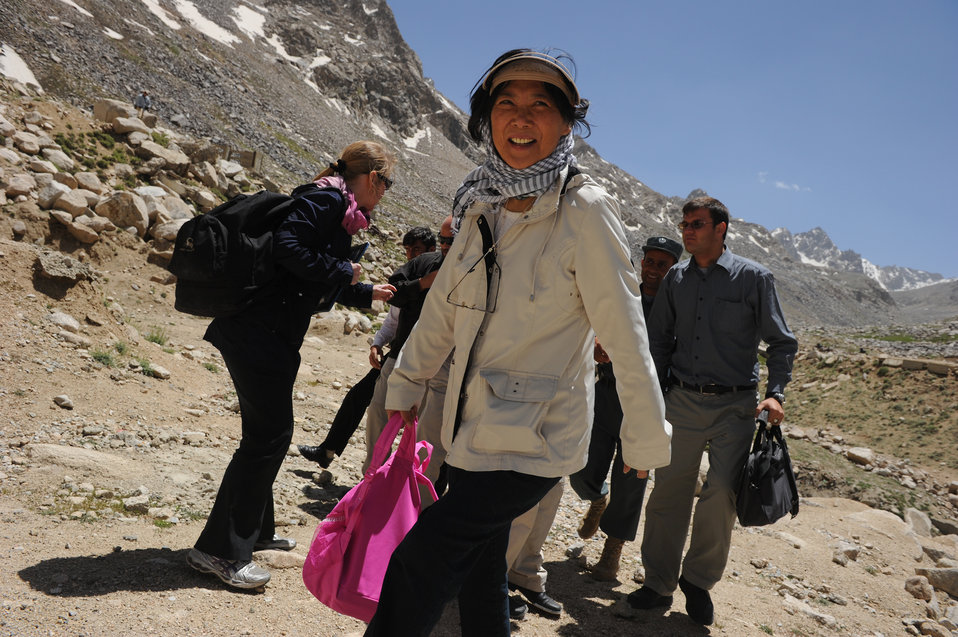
Ching Eikenberry, wife of U.S. Ambassador Karl W. Eikenberry, visits the area near the North end of the Salang Tunnel on the border of Parwan and Baghlan Provinces, Afghanistan, on Wednesday, June 15, 2011. (S.K.Vemmer/Department of State)